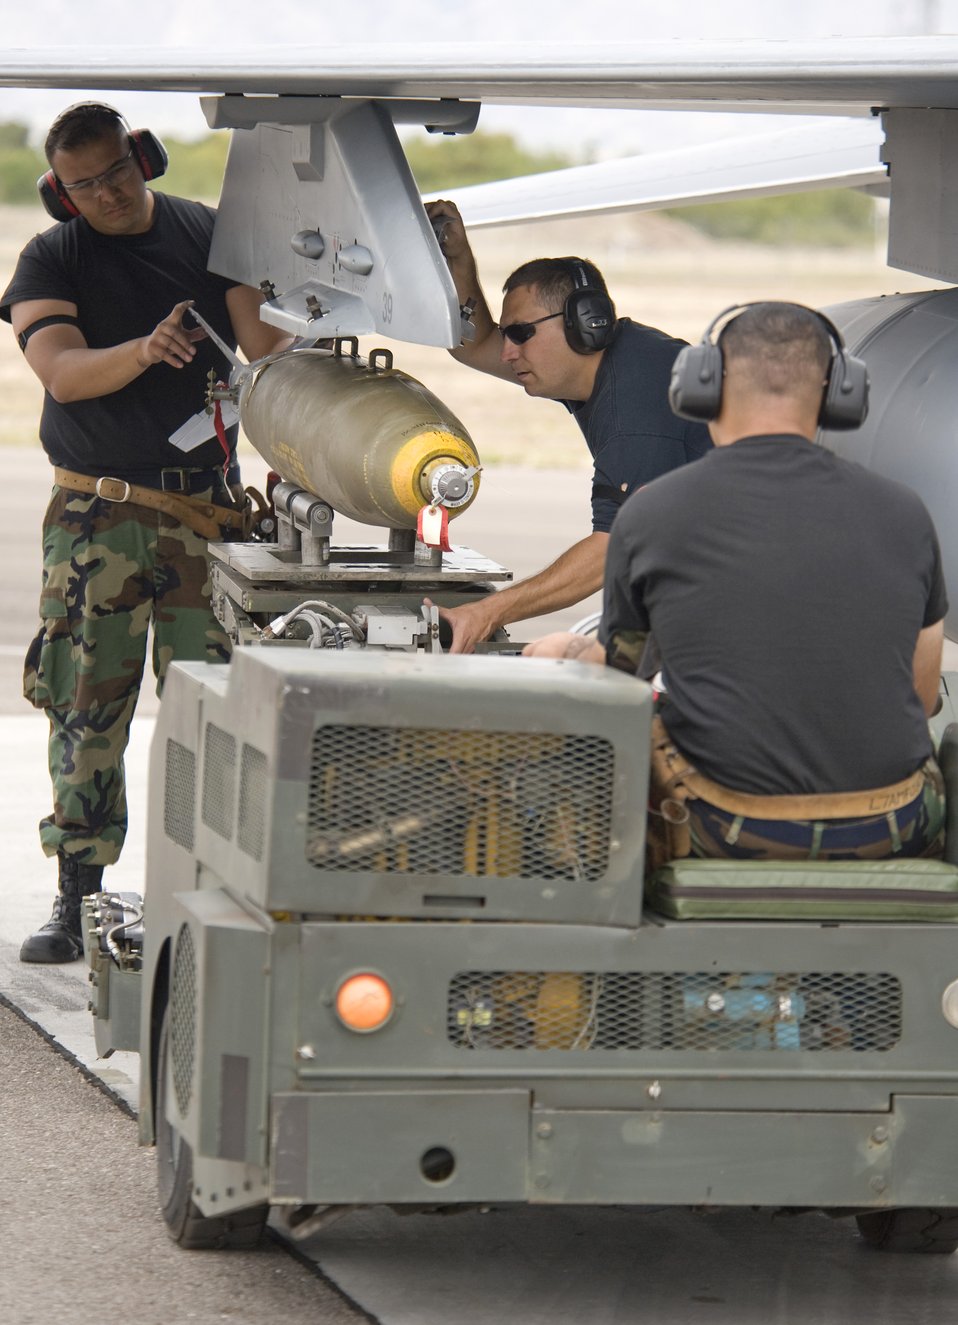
Airmen train next generation

Staff Sgt. William Sanchez (left to right), Tech. Sgt Alan Colombo and Staff Sgt. Jaime Alonzo load a live MK-82 500-pound bomb onto an F-16 Fighting Falcon April 27 at Davis-Monthan Air Force Base, Ariz. The Guard members are participating in Exercise Coronet Cactus. The three Airmen are weapons loaders from the Texas Air National Guard’s 149th Fighter Wing.